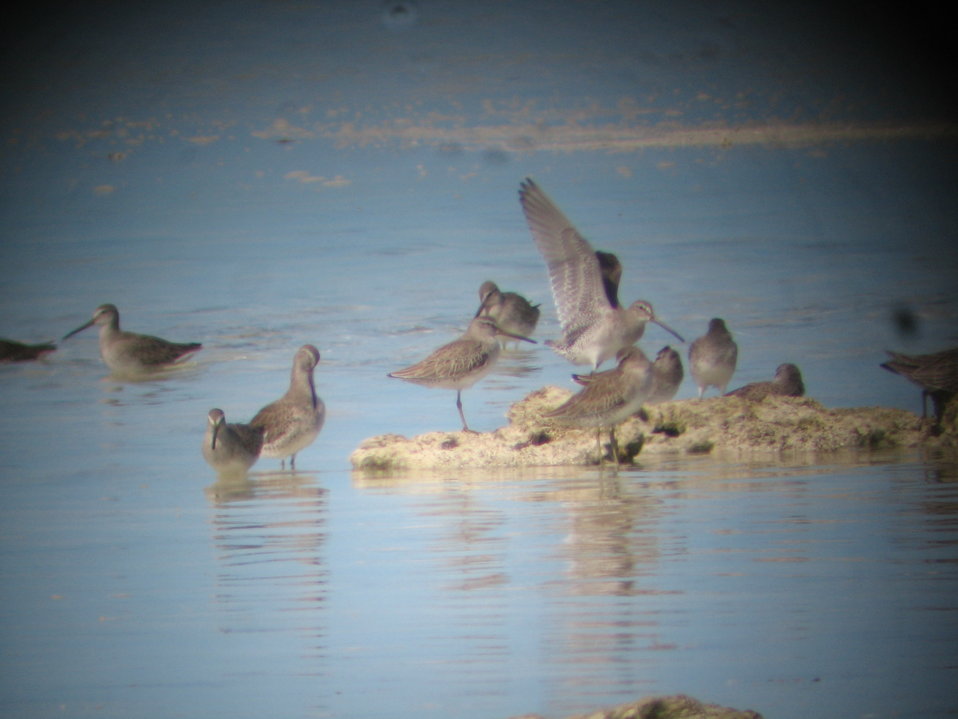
Shorebird flock at Berry Islands - dowitchers